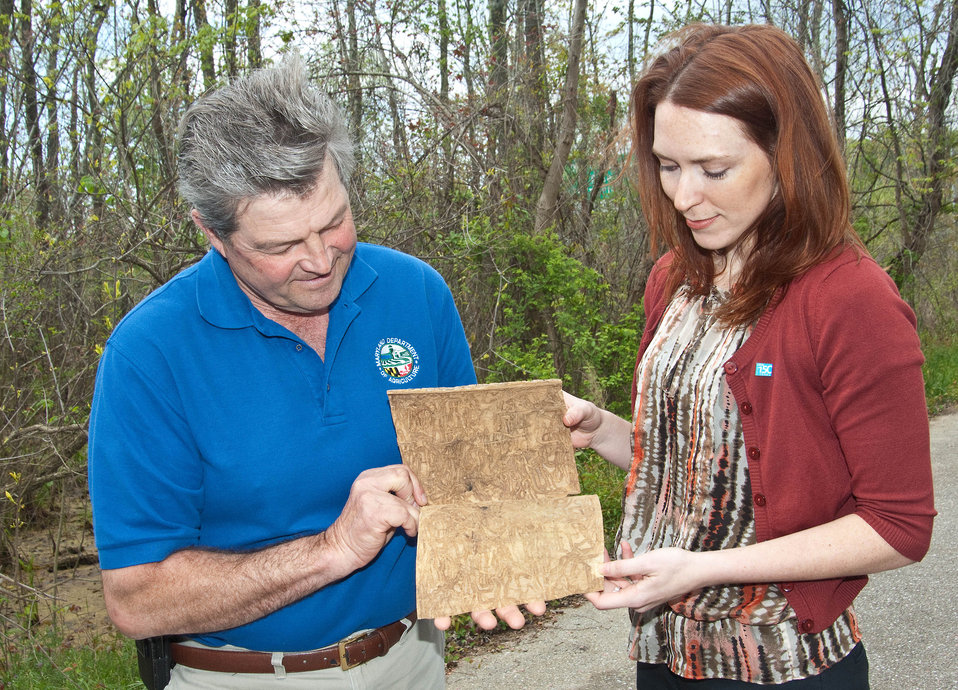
Agriculture Deputy Under Secretary for Marketing and Regulatory Programs Rebecca Blue and Maryland Agriculture Secretary Bubby Hance jointly hoisted one of the approximately 500 purple emerald ash borer survey traps that will be perched high in Maryland ash trees this summer on April 10, 2012. The traps, which will be used in 47 States, help State and Federal officials look for and find evidence of the invasive pest that damages and destroys ash trees.